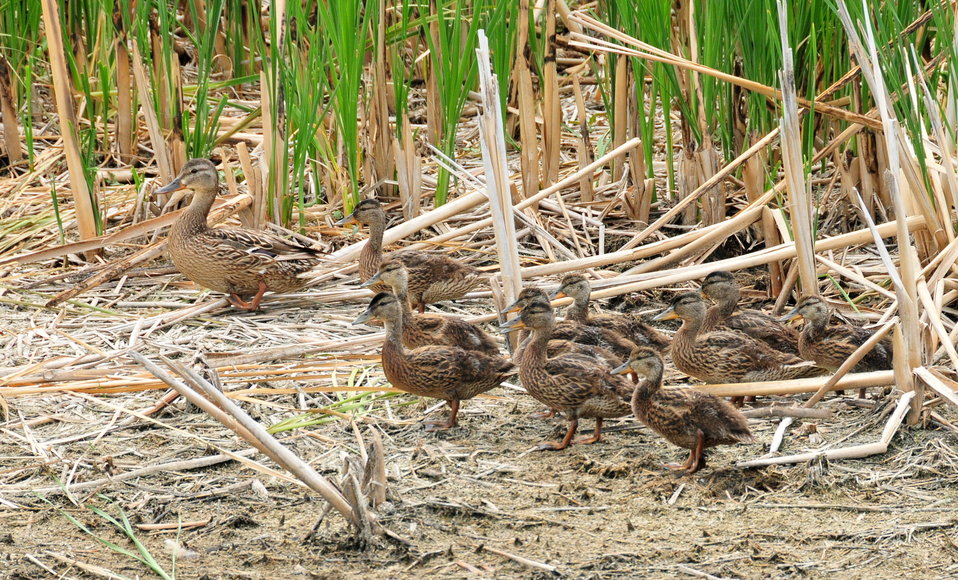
Mallard Hen and Brood on Sand Lake NWR